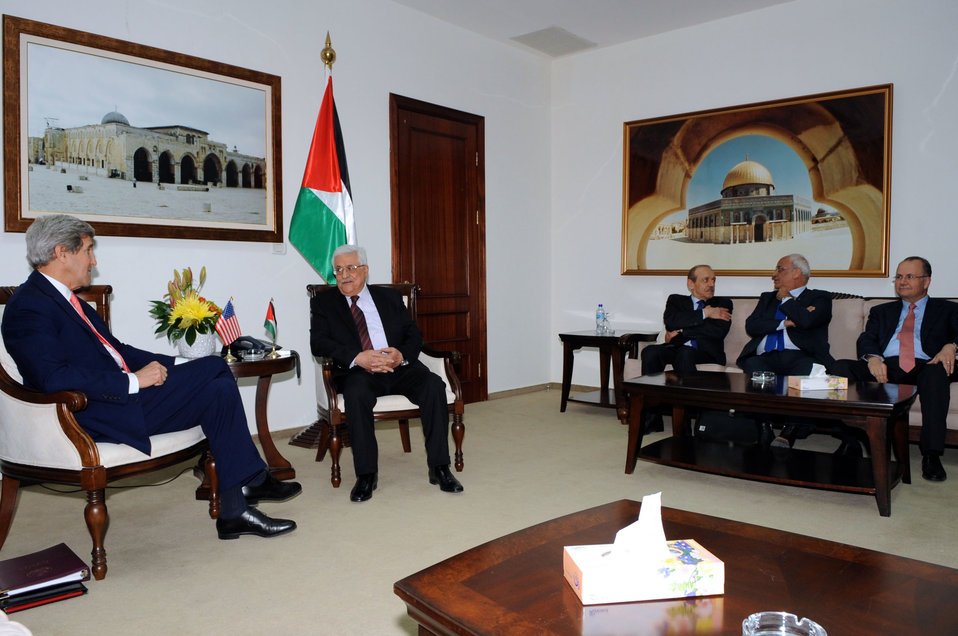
Secretary Kerry, President Abbas and Negotiating Team Meet in the West Bank

Palestinian Authority President Mahmoud Abbas is flanked by members of his negotiating team as he sits with U.S. Secretary of State John Kerry before a meeting focused on Middle East peace issues in Ramallah, West Bank, on January 3, 2014.